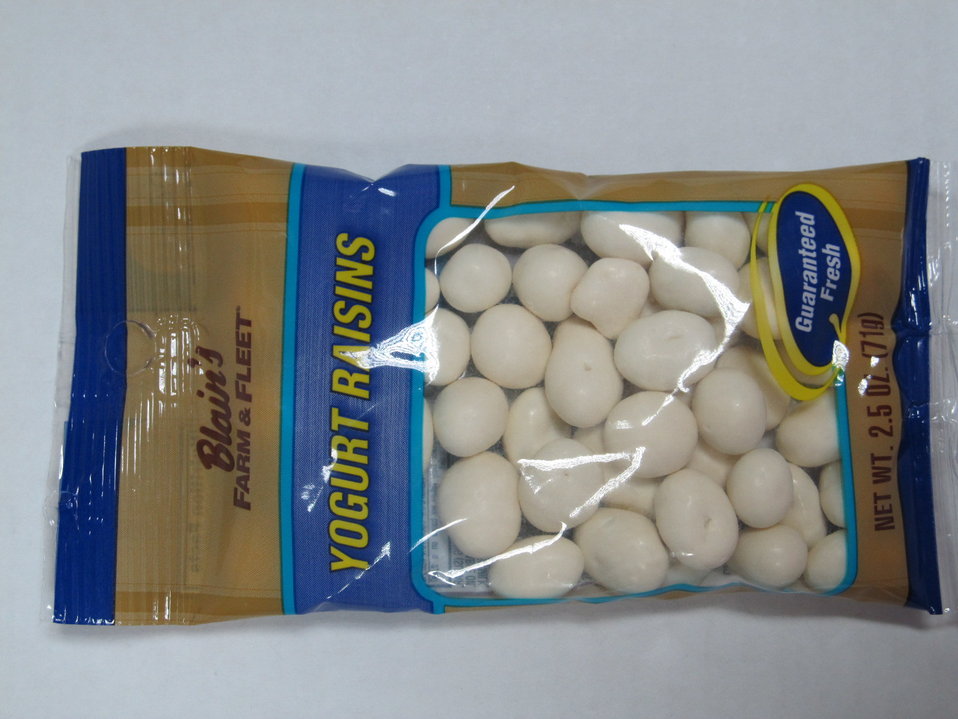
RECALLED - Yogurt Raisins and Granola Mix

December 22, 2011 - Eillien's Candies, Inc. Issues a Voluntary Recall of Select Candy Items Due to Possible Health Risk.